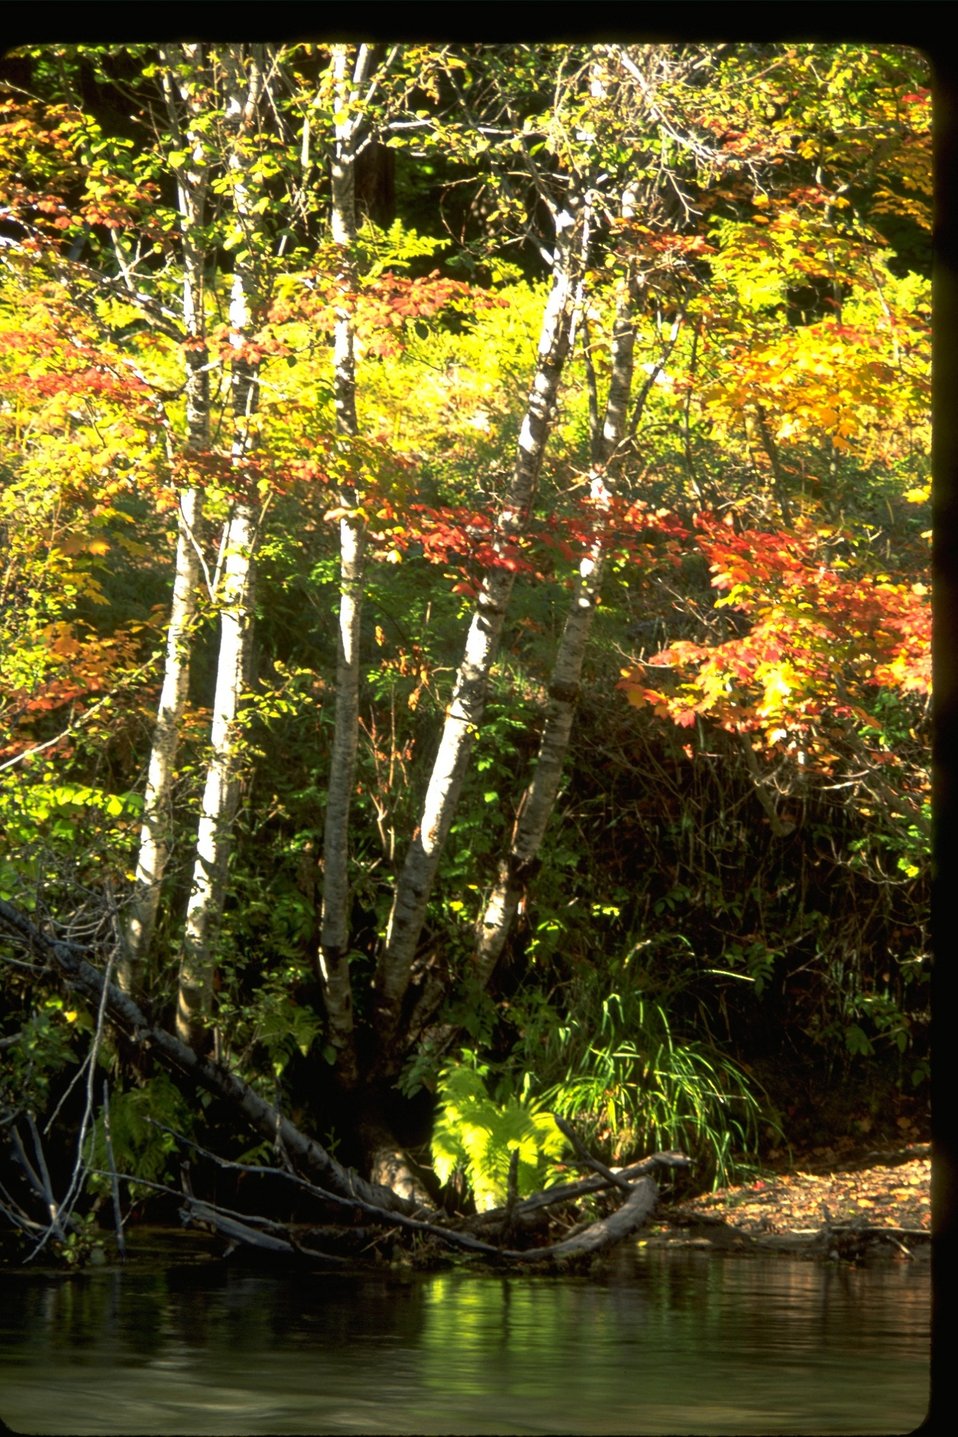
Upper Rogue River and the fall foliage.